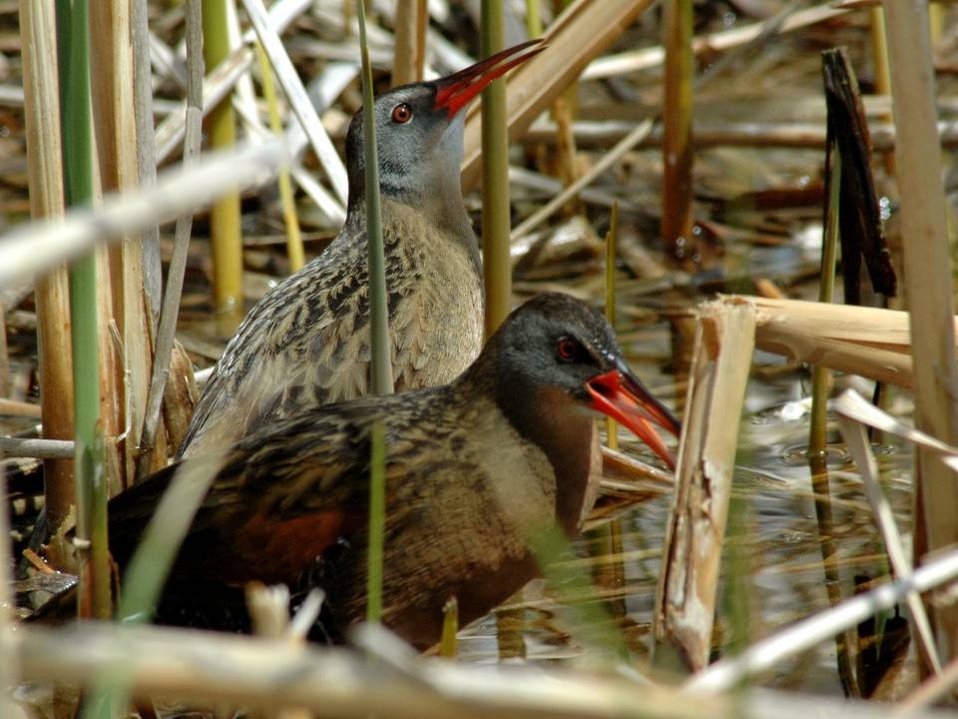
Virginia rail pair.